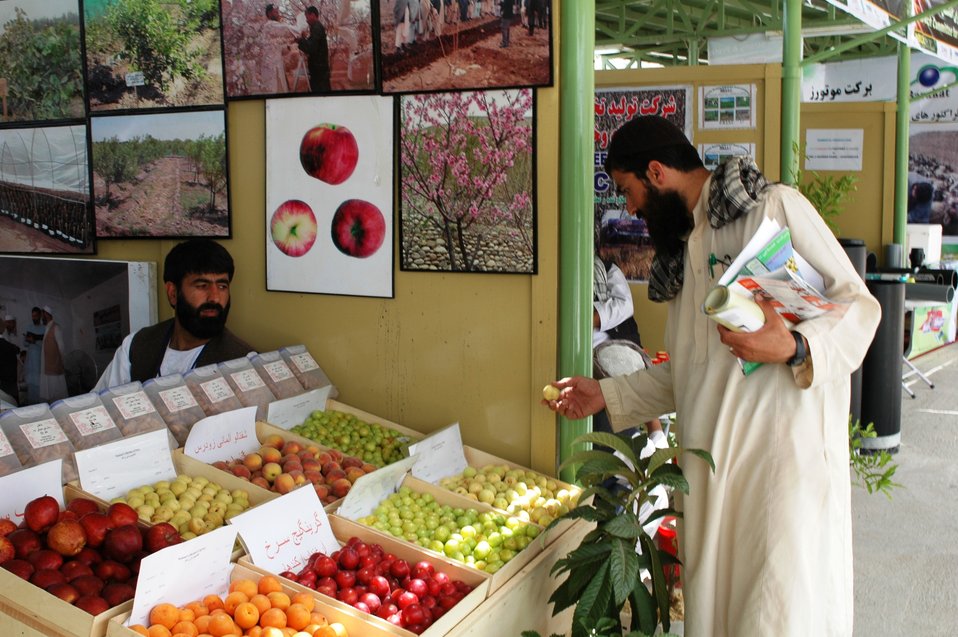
2009-May Kabul AgFair fruit vendor